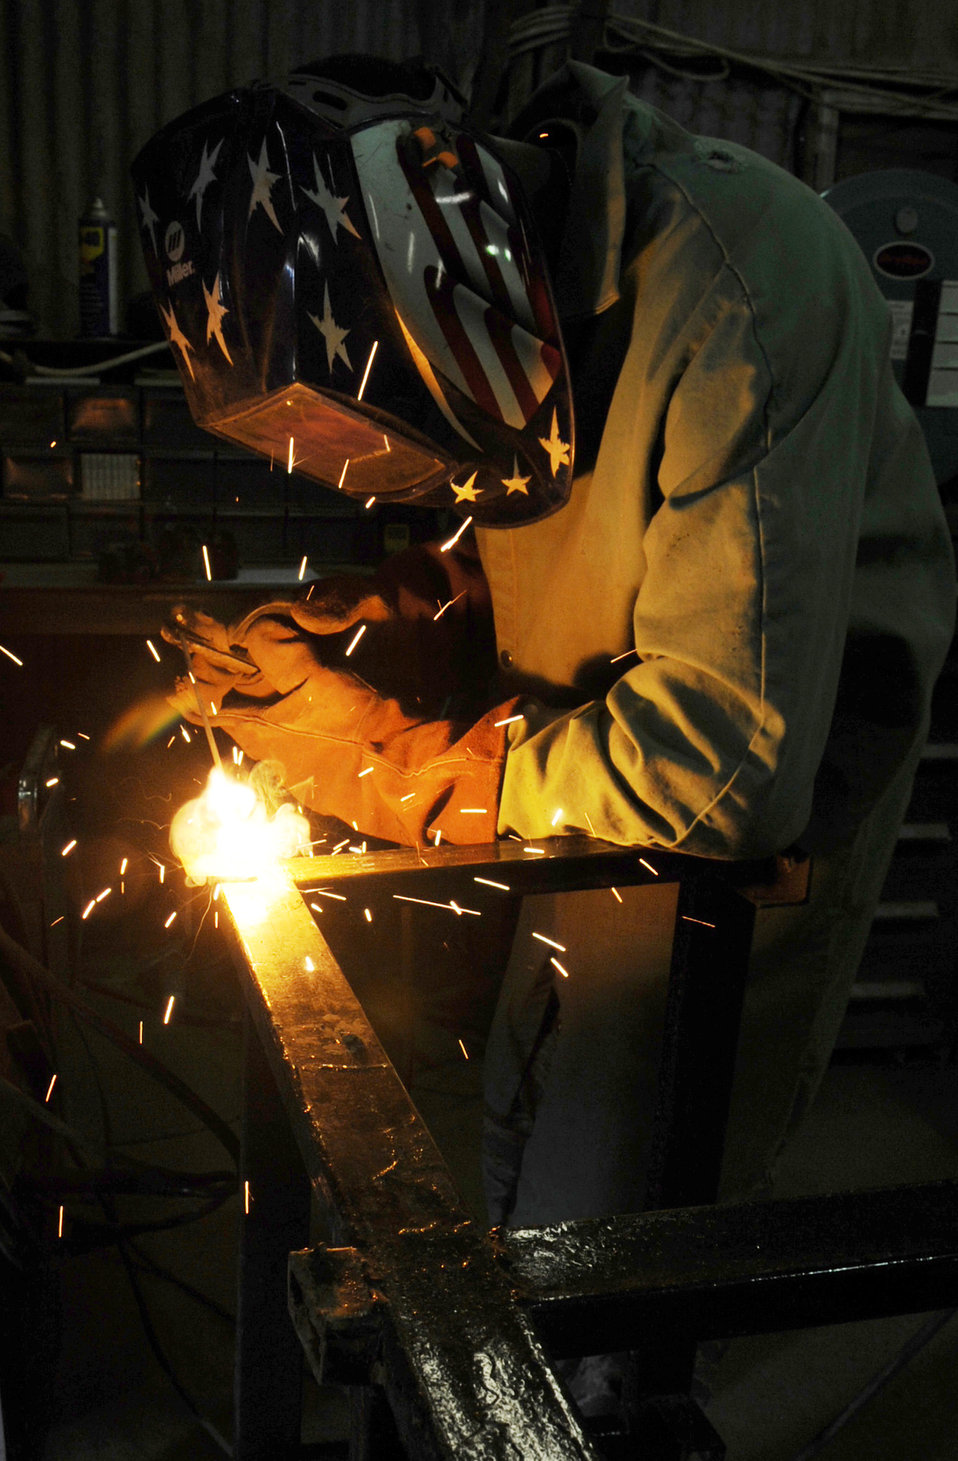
Kirkuk Airmen build desks for Iraqi children

Tech. Sgt. Anthony Williams welds together a school desk for local children on March 6, 2010, at Kirkuk Regional Air Base, Iraq. Sergeant Williams is a structures craftsman assigned to the 506th Expeditionary Civil Engineer Squadron.